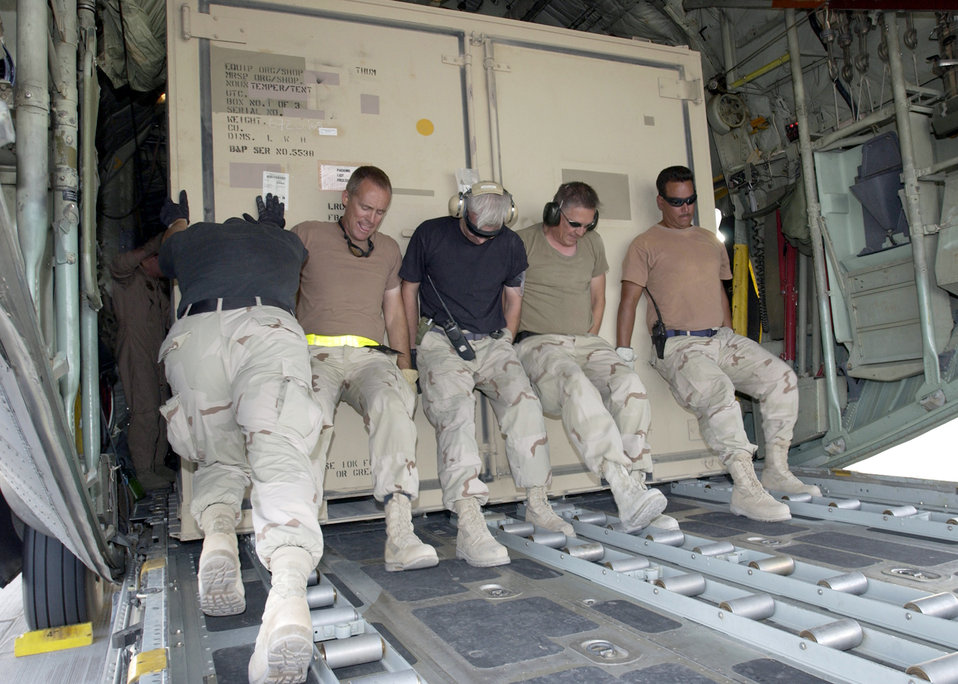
Moving mountains

SOUTHWEST ASIA -- Airmen from the 8th Expeditionary Air Mobility Squadron's aerial port flight load cargo on a C-130 Hercules at a forward-deployed location. In March and April, the Airmen moved more than 10,000 short tons of cargo.